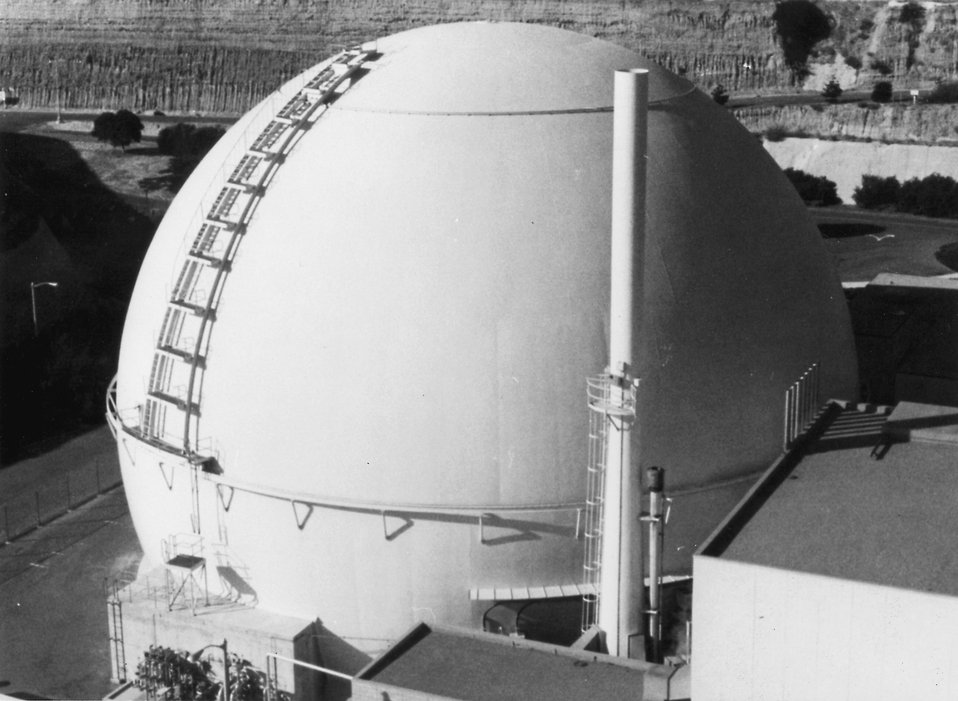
View of the 330 megawatt San Onofre Nuclear Reactor at San Clemente, California. Circa 1971.